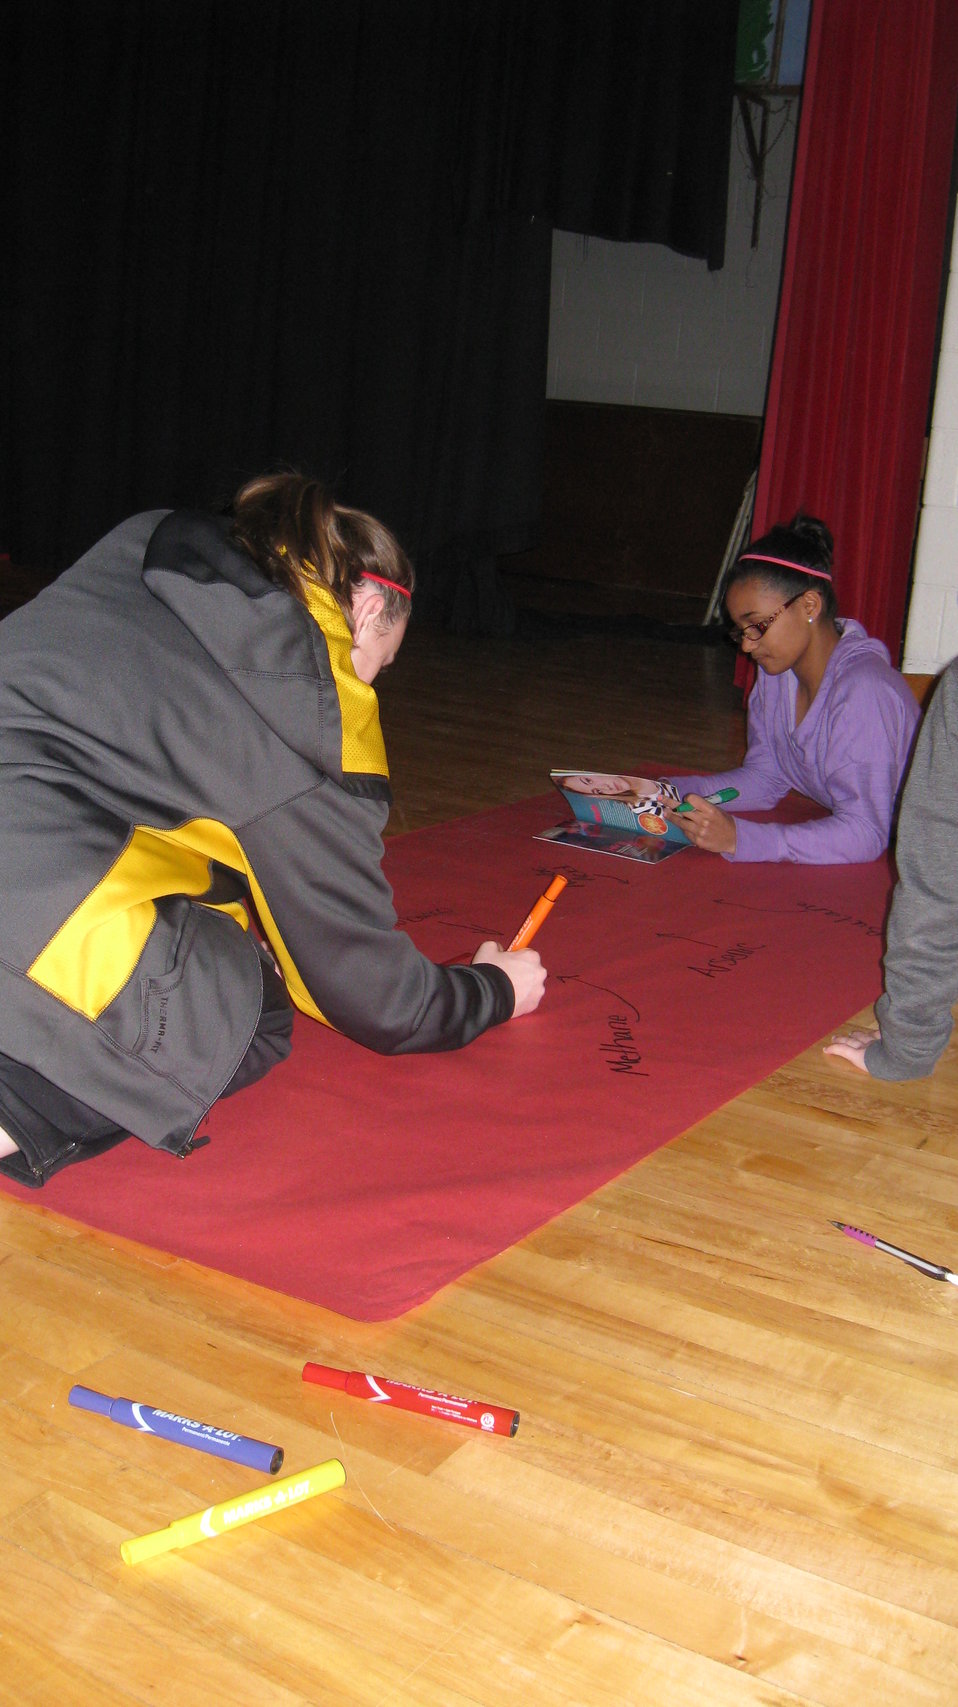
Making a Statement: NDFW 2014

Teenagers from the Van Buren County SAFE Coalition's, Youth Leadership Council (YLC) in Keosauqua, Iowa participate in various events during National Drug Facts Week, 2014.